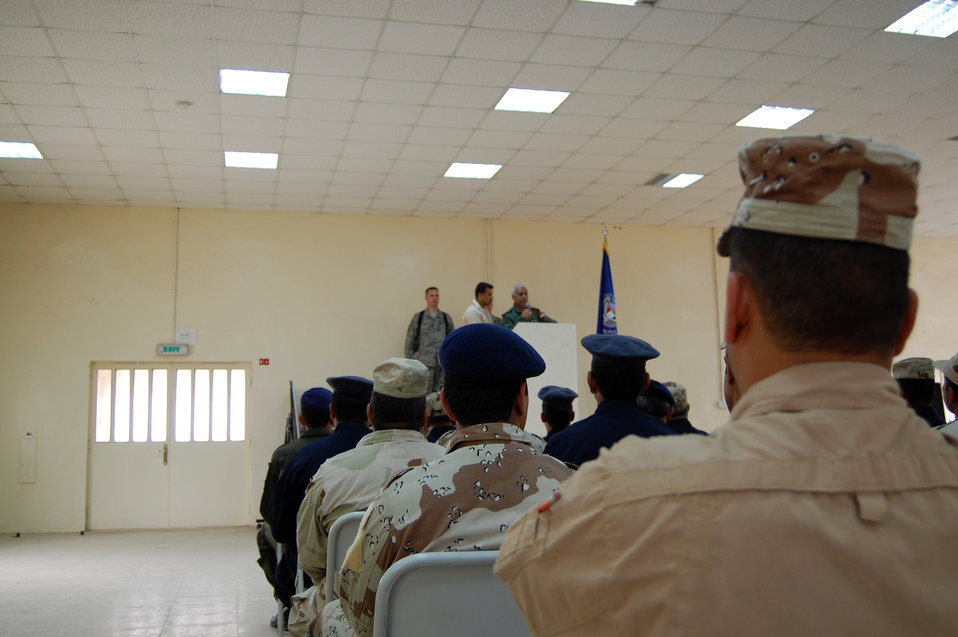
Air Force instructors empower Iraqi warrant officers to lead

Iraqi Gen. Nadam speaks to the graduating class of the Iraqi warrant officer professional development course about the importance of taking the knowledge they gained back to the field March 28 at Camp Taji, Iraq. Twenty-nine Iraqi warrant officers completed the seven-day course where they were taught lessons on discipline, leader influence, teamwork and development, ethics and values, Law of Armed Conflict and problem solving. General Nadam is the Al Taji Air Base commander.